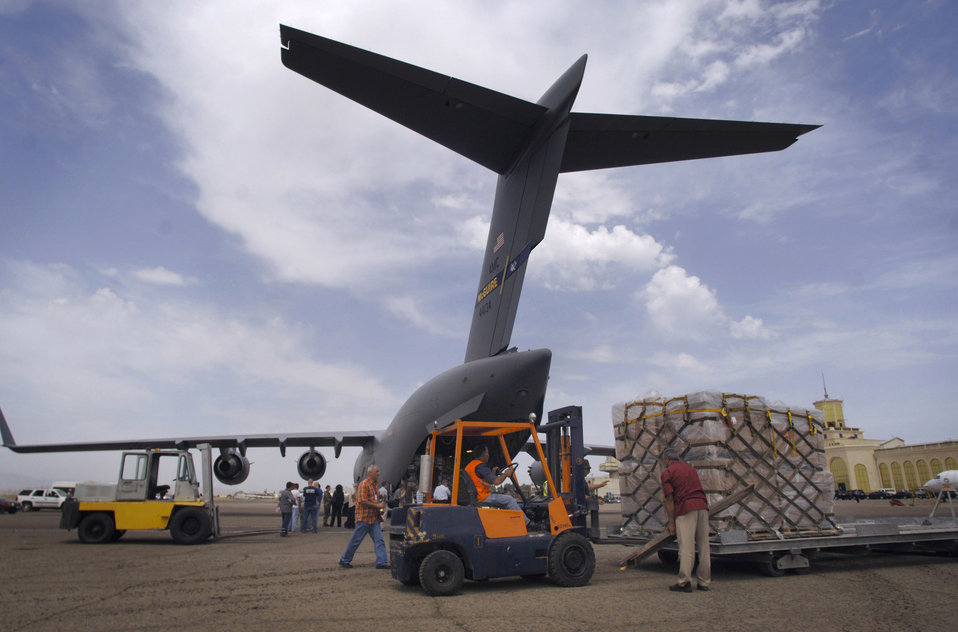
$2 million humanitarian mission in Georgia to continue

A C-17 Globemaster III from McGuire Air Force Base, N.J., delivers humanitarian aid to a civilian airport in Tbilisi, Republic of Georgia, Aug. 14. The delivery was a joint-service effort between U.S Army Europe Soldiers, U.S. Air Forces Europe and Air Mobility Command Airmen.